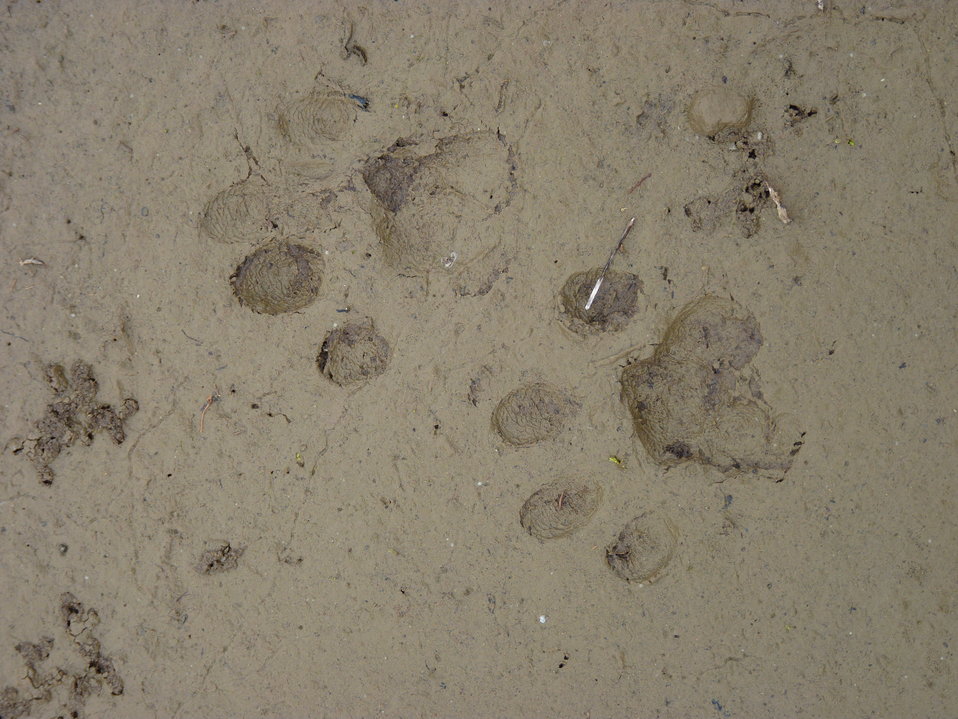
Lynx tracks

Andreafsky Wilderness, Yukon Delta National Wildlife Refuge